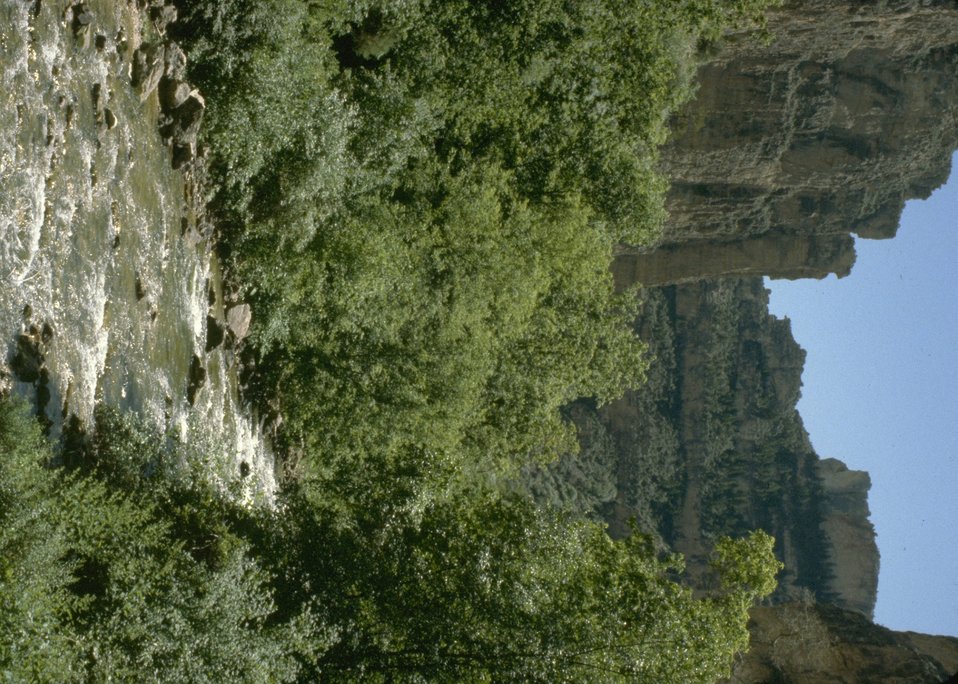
Scenic view.